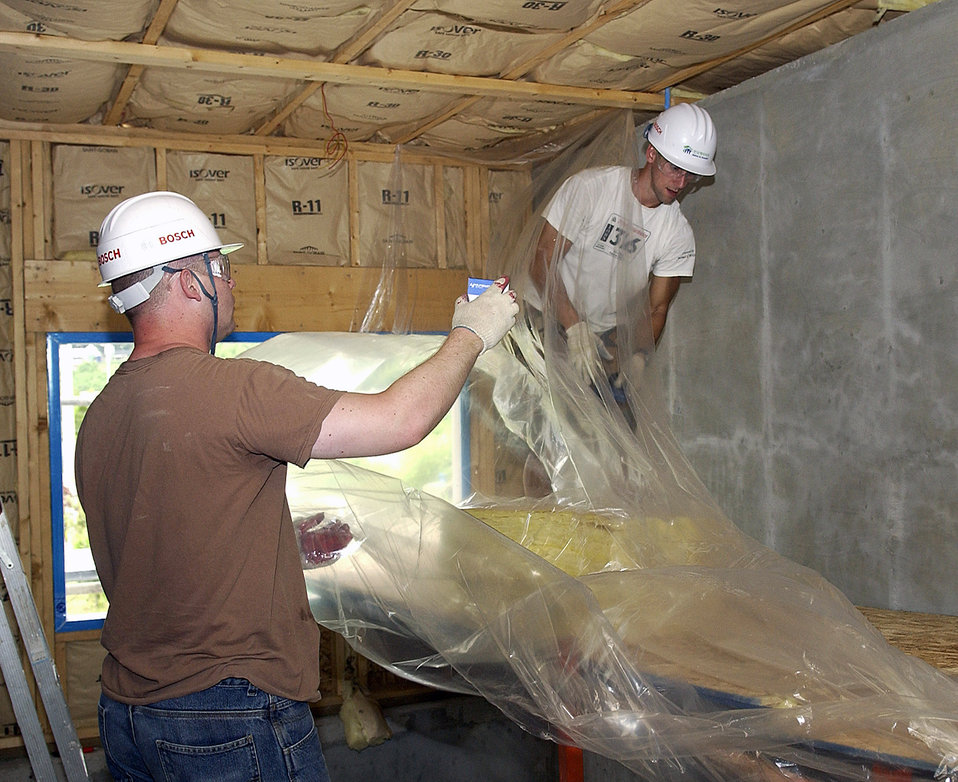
Good neighbors

Capt. Timothy Stout and Senior Airman Anthony Philllips work on the interior of a Habitat for Humanity house Aug. 1 in Gunsan City, South Korea. Airmen from Kunsan Air Base and Korean university students worked together for a week building Habitat for Humanity homes for Gunsan City families. Captain Stout is assigned to the 8th Fighter Wing and Airman Phillips is assigned to the 8th Communications Squadron.